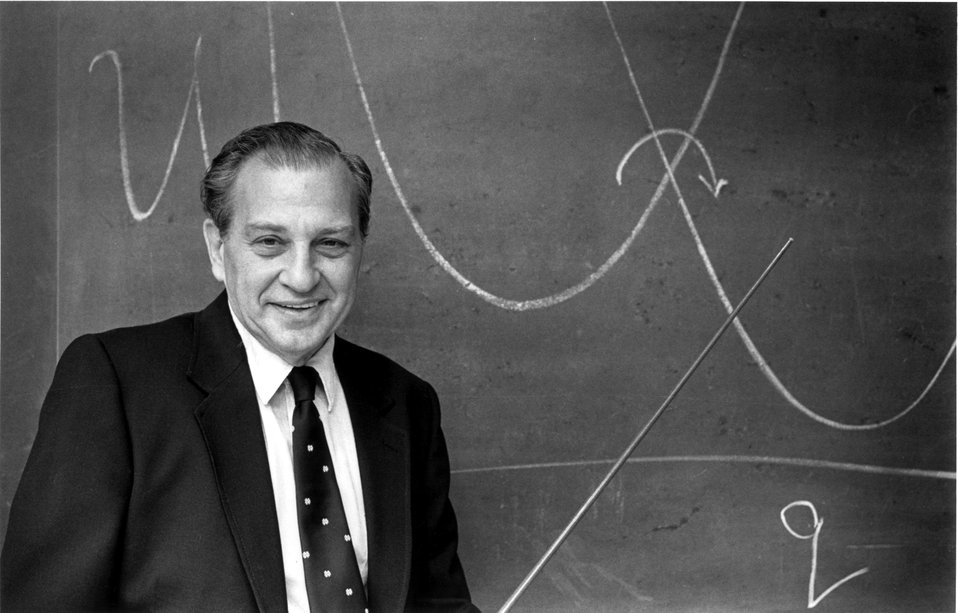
Rudolph Marcus, winner of the 1992 Nobel Prize for Chemistry.